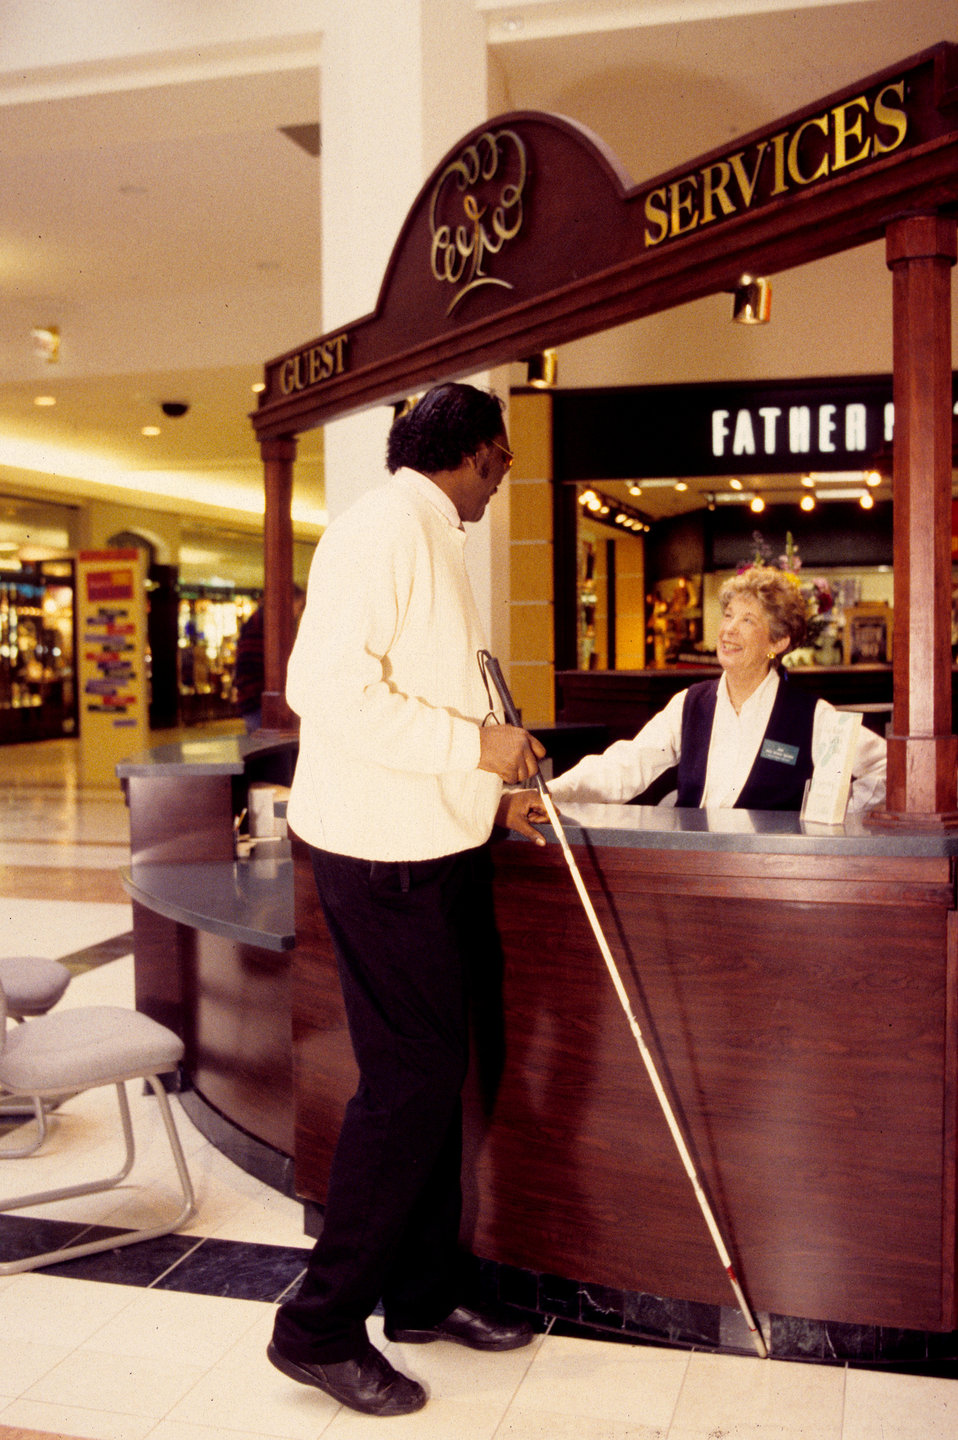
Captured inside the common area of a shopping mall, this image depicted a man standing adjacent to an information kiosk occupied by a helpful associate assisting the man, who happened to be holding a walking cane, with his questions. This was one of a series of images provided by North Carolina State University's Center for Universal Design. 'The Center for Universal Design is a national research, information, and technical assistance center that evaluates, develops, and promotes universal design in housing, public and commercial facilities, and related products.' Such information desks, and other resources, which combine both visual with audible information, are the most useful to a wider range of visitors, some of whom may be disabled.